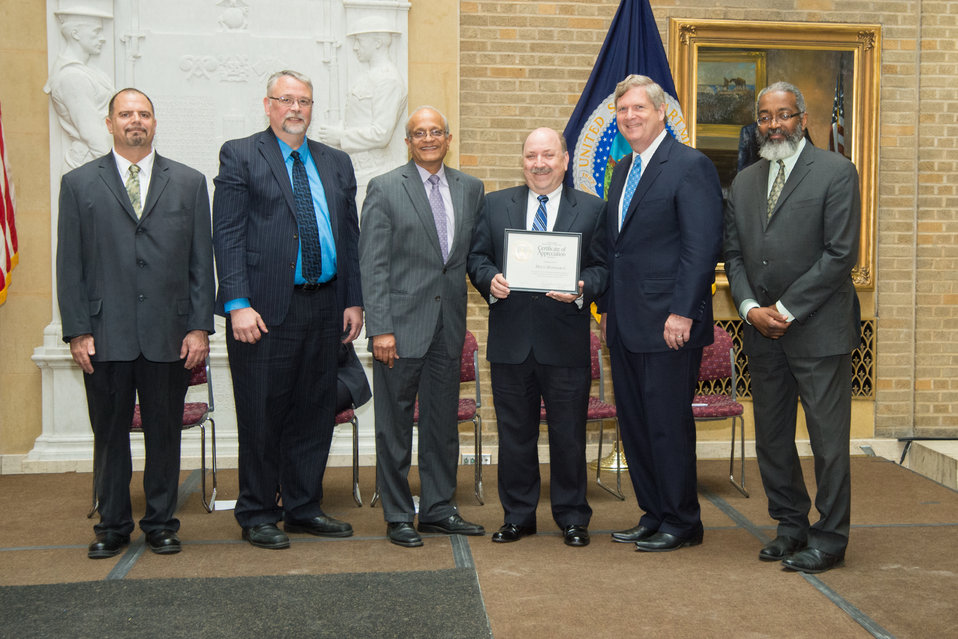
U.S. Department of Agriculture (USDA) National Institute of Food and Agriculture (NIFA) Meryl Broussard receives the Unsung Hero Award from USDA’s Organization of Professional Employees President (OPEDA) Louis Iacoletti, USDA NIFA Director Dr. Sonny Ramaswamy, Agriculture Secretary Tom Vilsack and USDA Assistant Secretary for Administration Dr. Gregory Parham at USDA in Washington, D.C. on Wednesday, May 7, 2014.